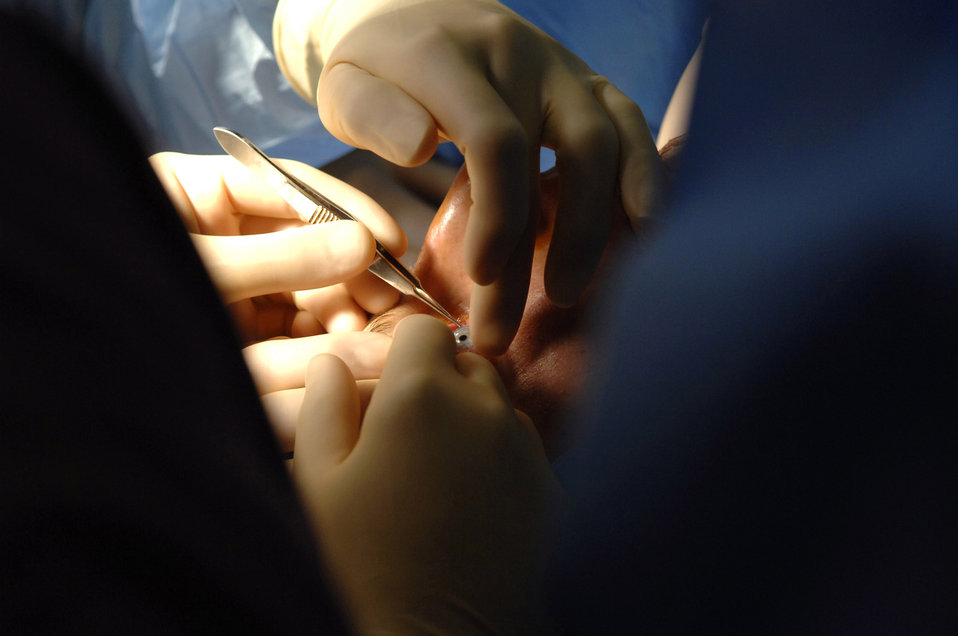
Eye doctors give patients new outlook

Several ophthalmologists assigned to 332nd Expeditionary Medical Operations Squadron operate on a trauma patient who sustained extensive eye injures during combat operation in Iraq here July 10. Eye doctors assigned to the Air Force Theater Hospital see twice as many eye traumas than they encounter at their home stations.